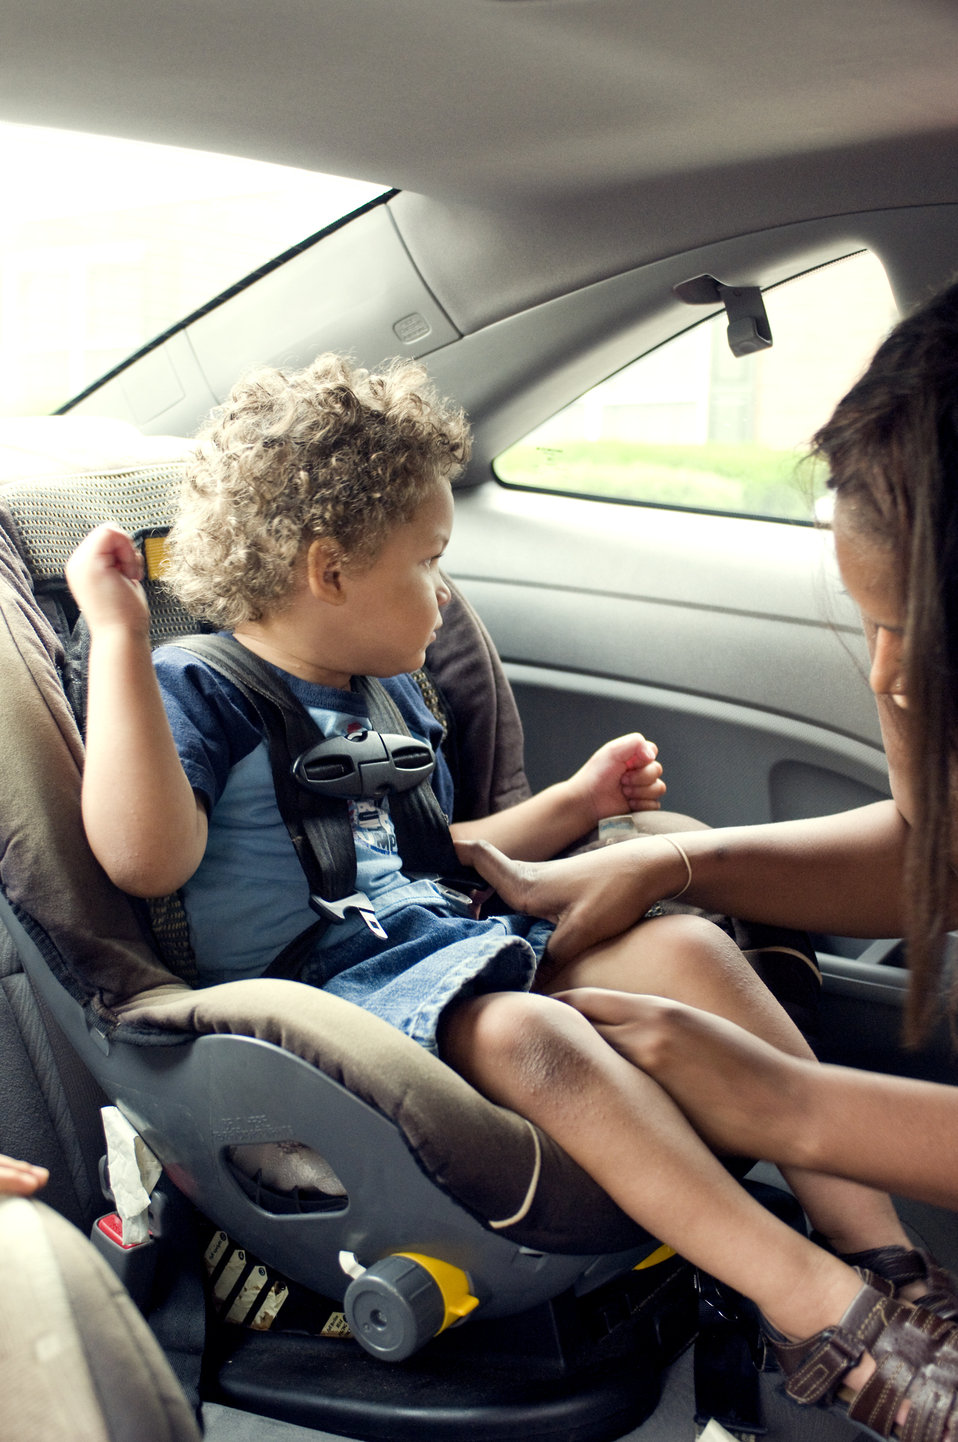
This image depicts a mother in the process of securing her young son into his back seat-located child safety seat. At this point of the process, she was adjusting her son's fit in the seat, ensuring both his safety and comfort.